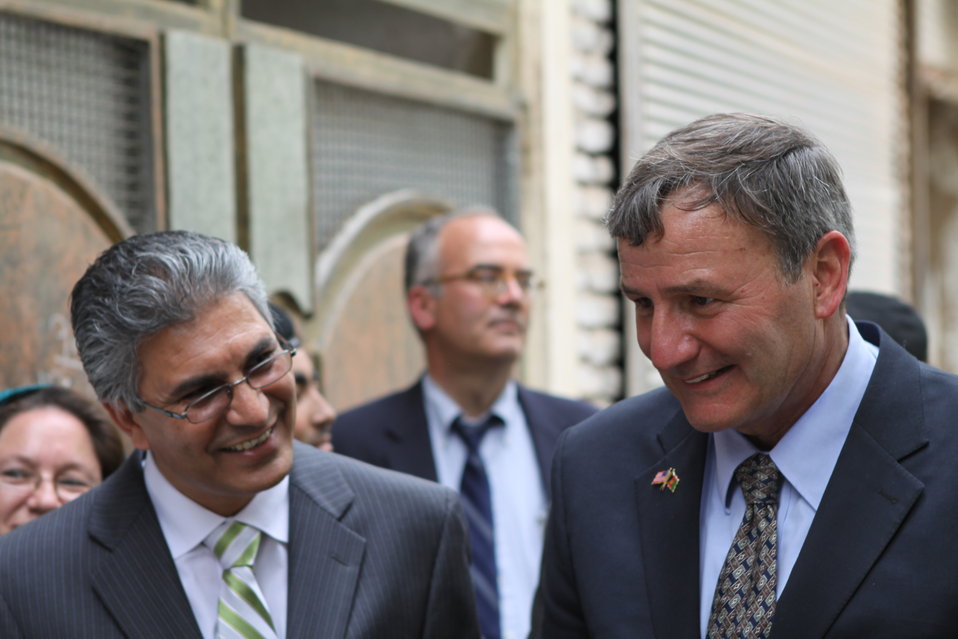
100525 Hirat Marble Conference 702